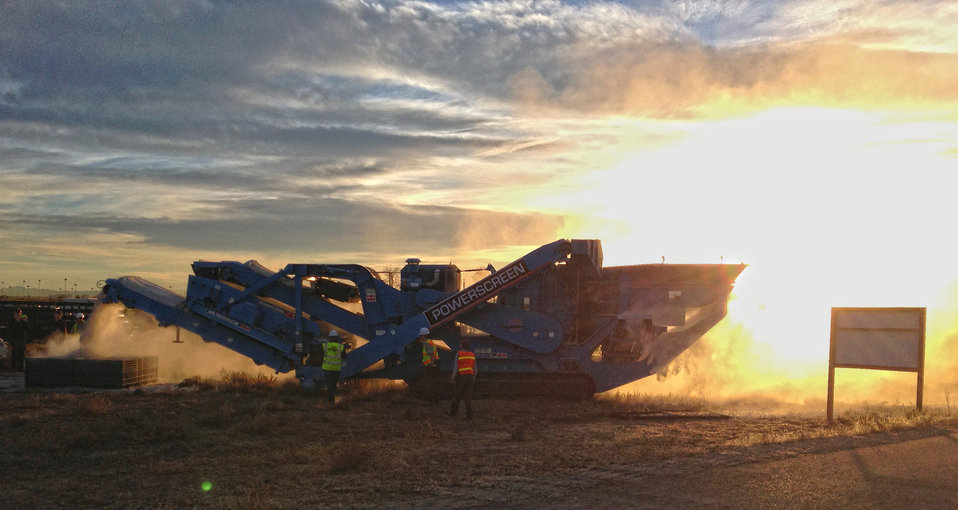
Crushing continued until dusk